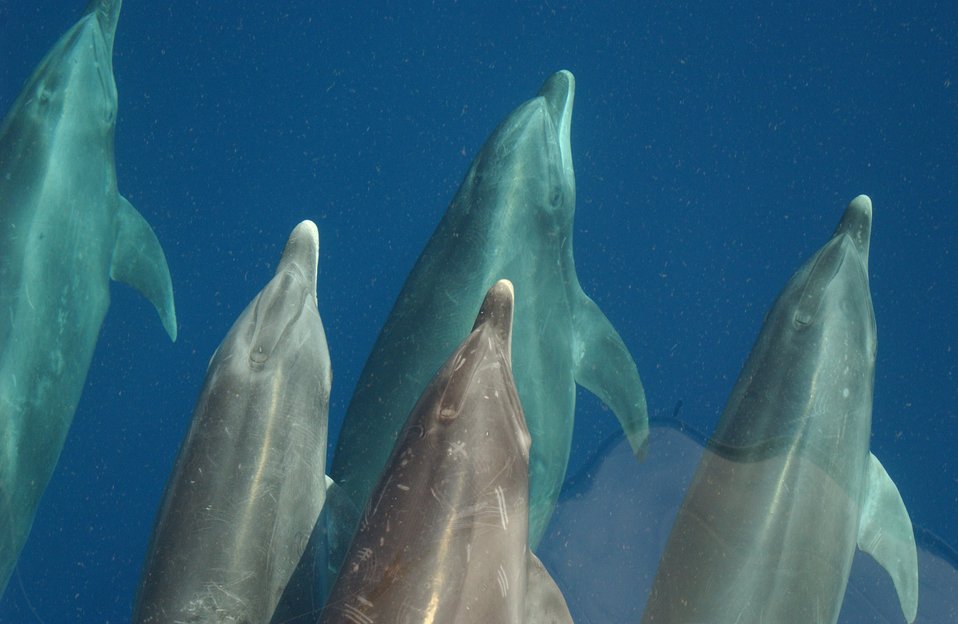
Bottlenose dolphin